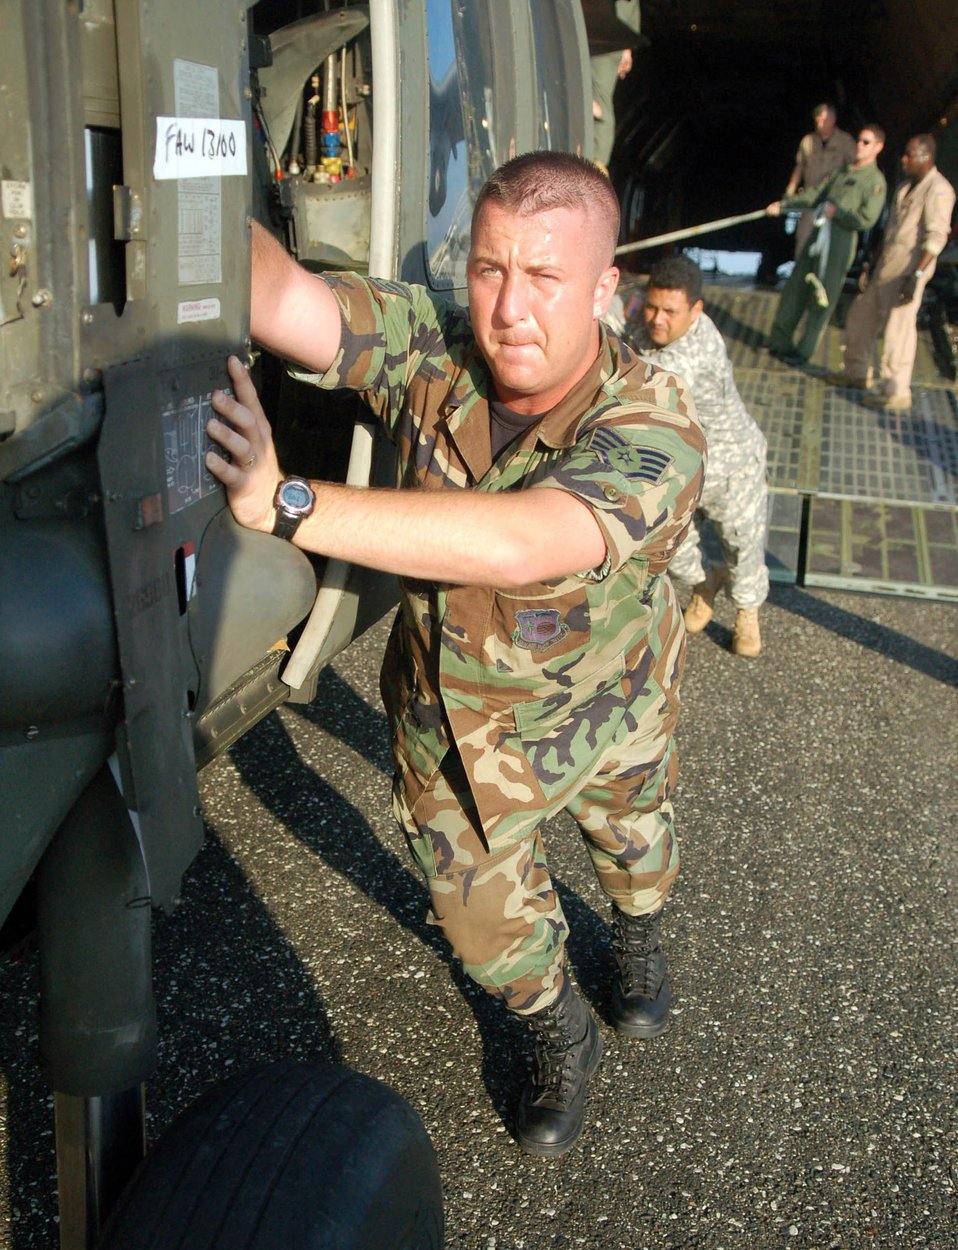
Medical mission becomes primary focus following Noel

Staff Sgt David Pagani helps push an Army UH-60 Blackhawk helicopter out of a C-5 Galaxy Nov. 8 at San Isidro Air Base, Dominican Republic. Servicemembers deployed from Joint Task Force-Bravo at Soto Cano Air Base, Honduras, to assist the Dominican Republic after it was ravaged by Tropical Storm Noel are now refocusing efforts from search and rescue to helping the sick and injured.